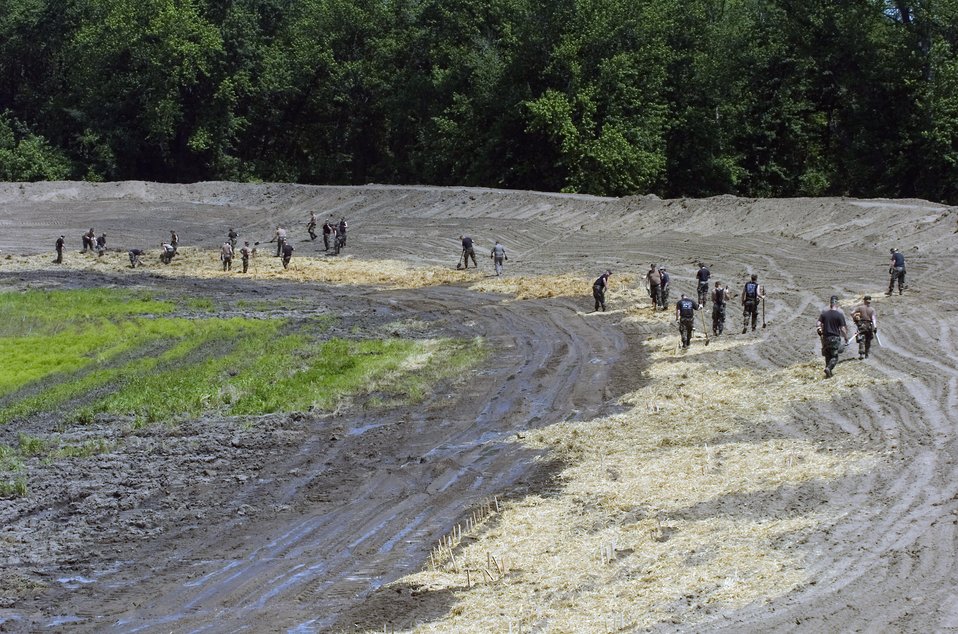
This levee won't break

Members from the Iowa National Guard's 185th Air Refueling Wing repair eroded areas of a levee along the Mississippi River June 18 at Green Bay, Iowa. The Airmen worked with area farmers and levee district workers in maintaining the levees.